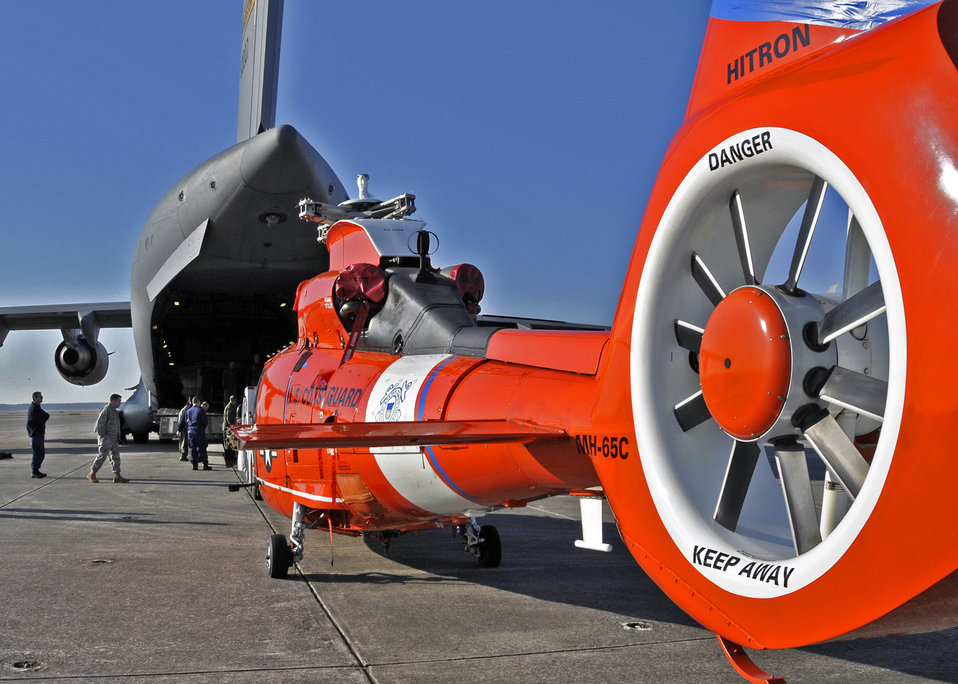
Moving the Coast Guard

Airmen prepare to load a Coast Guard helicopter onto a C-17 Globemaster III April 7 at Charleston Air Force Base, S.C. Two helicopters were delivered to Central America for missions there. The C-17 aircrew is from the Air Force Reserve's 315th Airlift Wing from Charleston AFB.